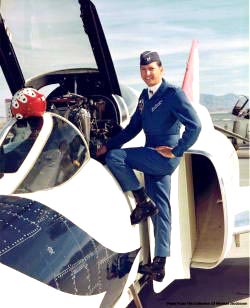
Former Thunderbird searches for Phantoms

NELLIS AIR FORCE BASE, Nev. -- Shown here in 1972, Capt. Gary Younglove poses for a Thunderbirds publicity shot. Now retired, he is on a nationwide journey to visit each of the original F-4 Phantom Thunderbirds.